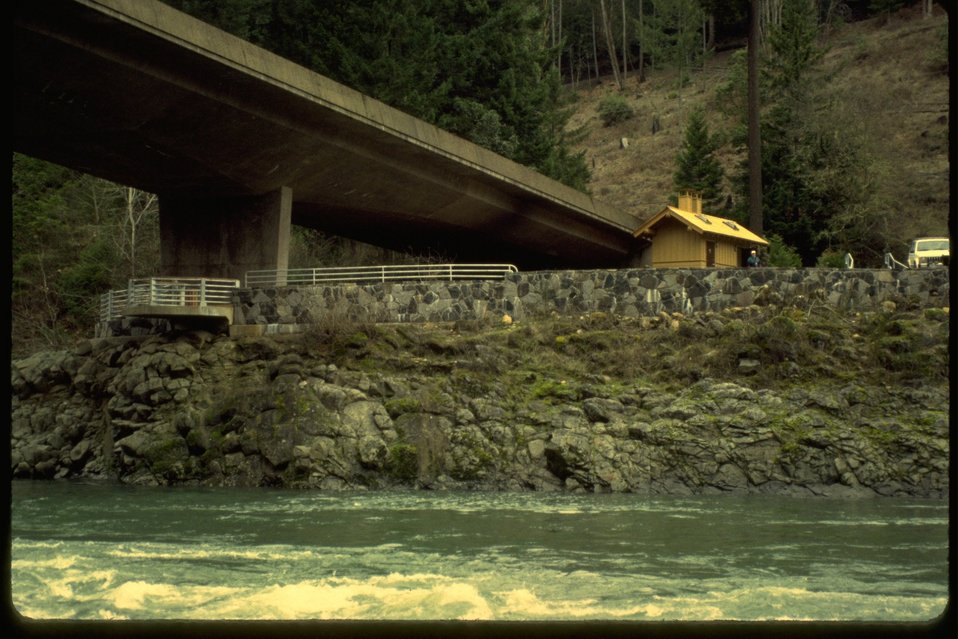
Wayside from across the North Fork of the Umpqua River.